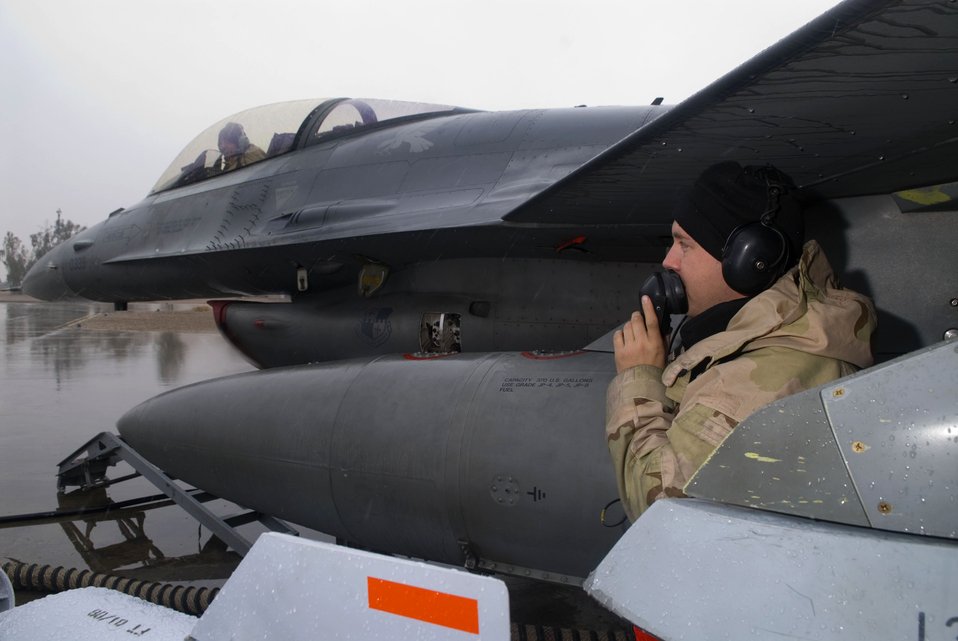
Through snow and rain

Staff Sgt. Jeremy Crombie talks to Senior Airman Trevor Scott via radio headsets about the status of a Global Positioning System test for a F-16 Fighting Falcon Jan. 11 at Balad Air Base, Iraq. Sergeant Crombie and Airman Scott are 332nd Expeditionary Aircraft Maintenance Unit avionics technicians deployed from Spangdahlem Air Base, Germany.